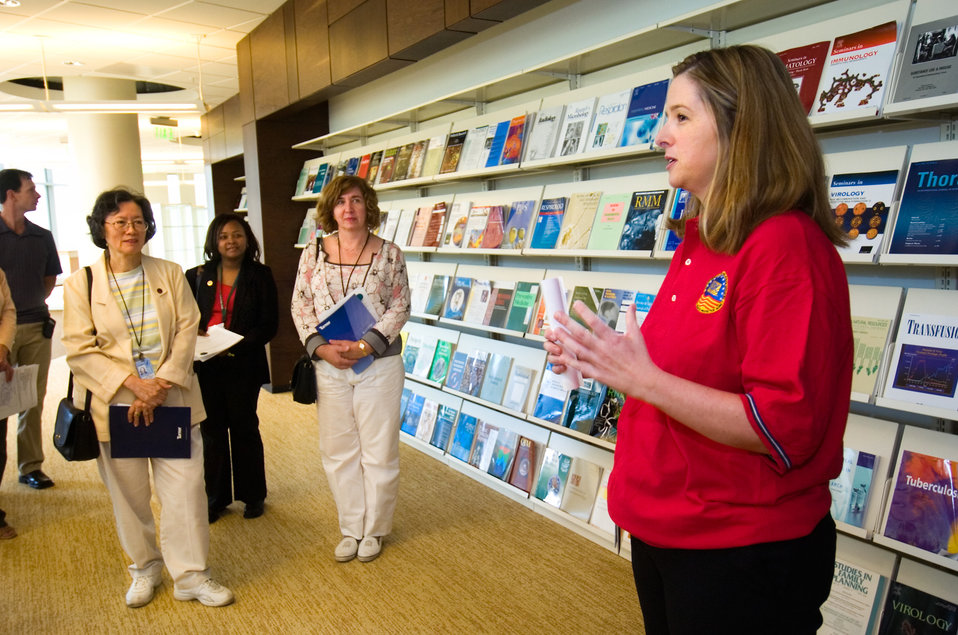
This 2005 photograph depicted Leslyn McNabb, a Center for Disease Control Information Center staff member, speaking to fellow enployees during the organization's 'Employee Preview Day", inside the new Tom Harkin Global Communications Center's Information Center/Library, otherwise known as Building 19, located on the CDC's Roybal Campus in Atlanta, Georgia.